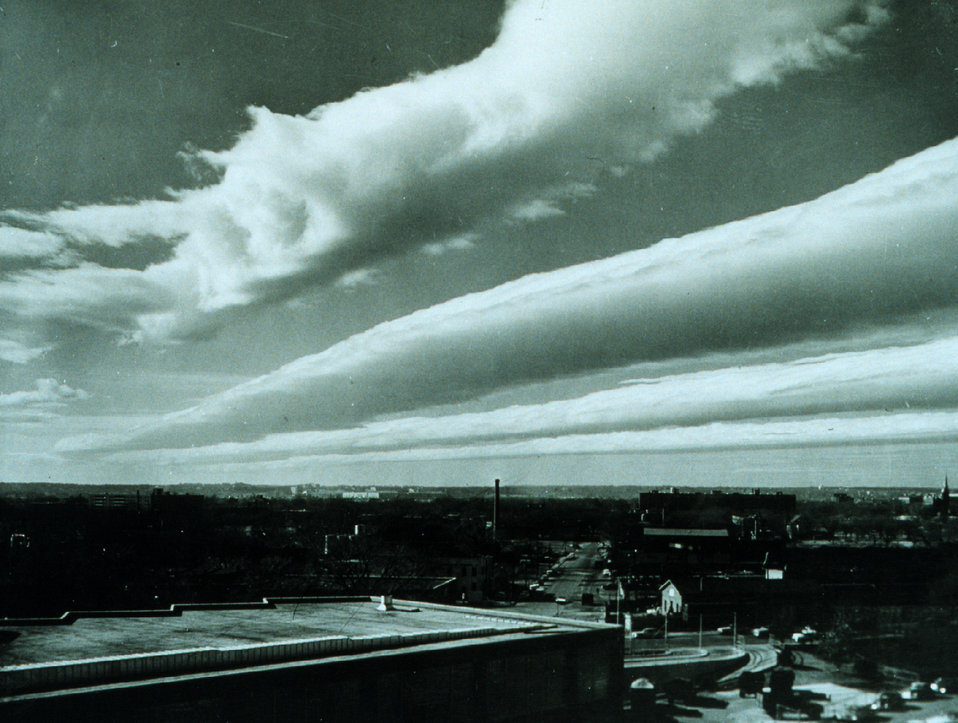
Wave clouds extending from southwest to northeast The base of the clouds at 10,000 to 12,000 feet